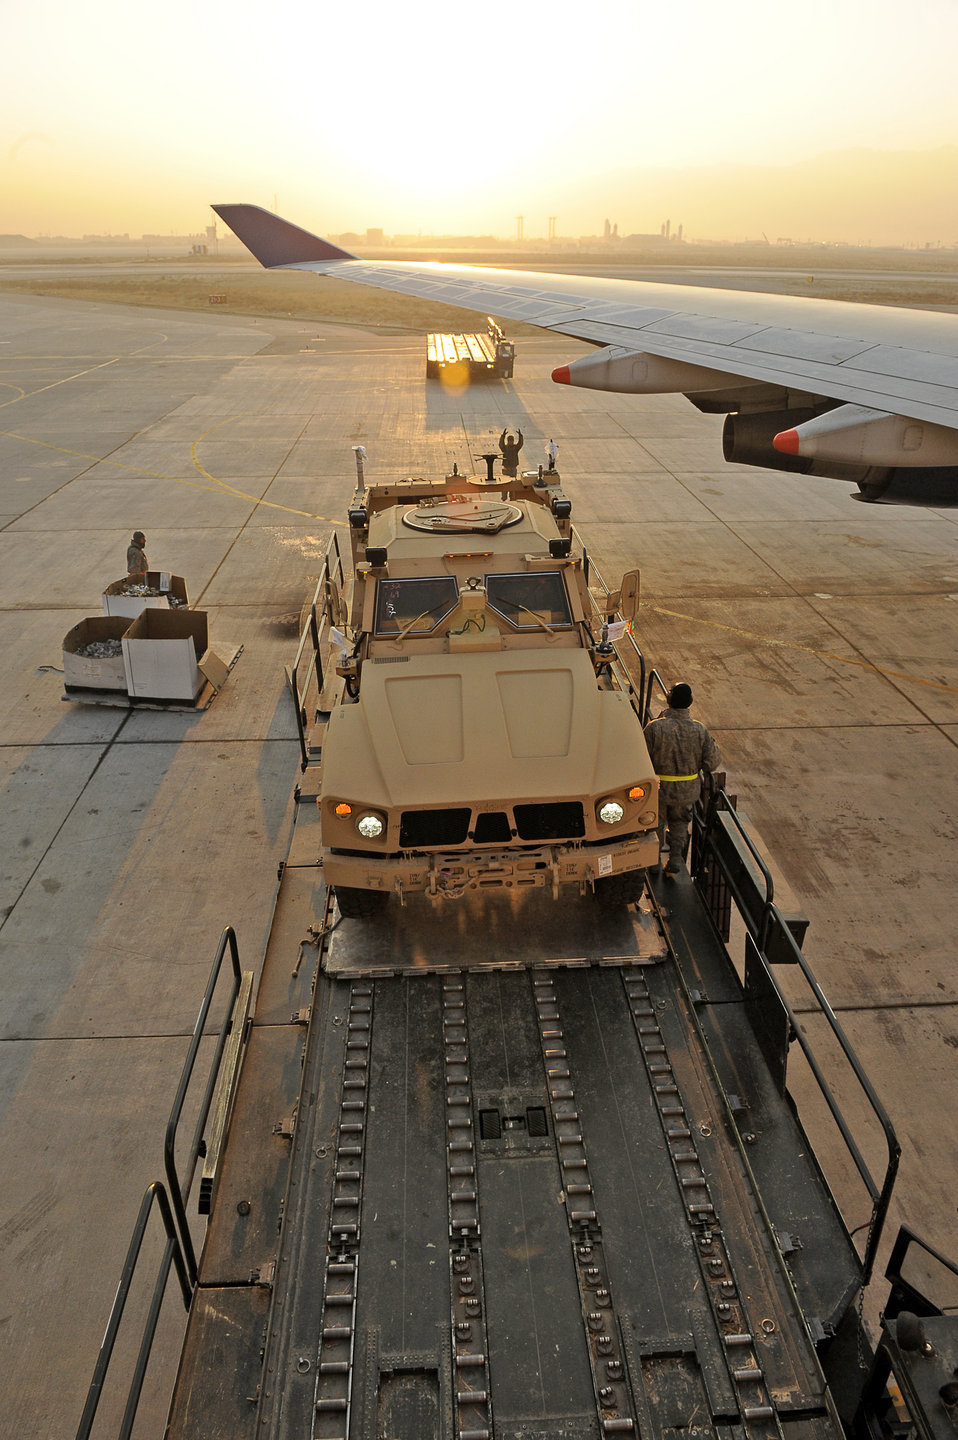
Moving the goods

Airmen unload a mine-resistant, ambush-protected all-terrain vehicle Jan. 13, 2010 at Bagram Airfield, Afghanistan. The M-ATV is the latest combat vehicle used by U.S. combat forces. The Airmen are assigned to the 455th Expeditionary Aerial Port Squadron.